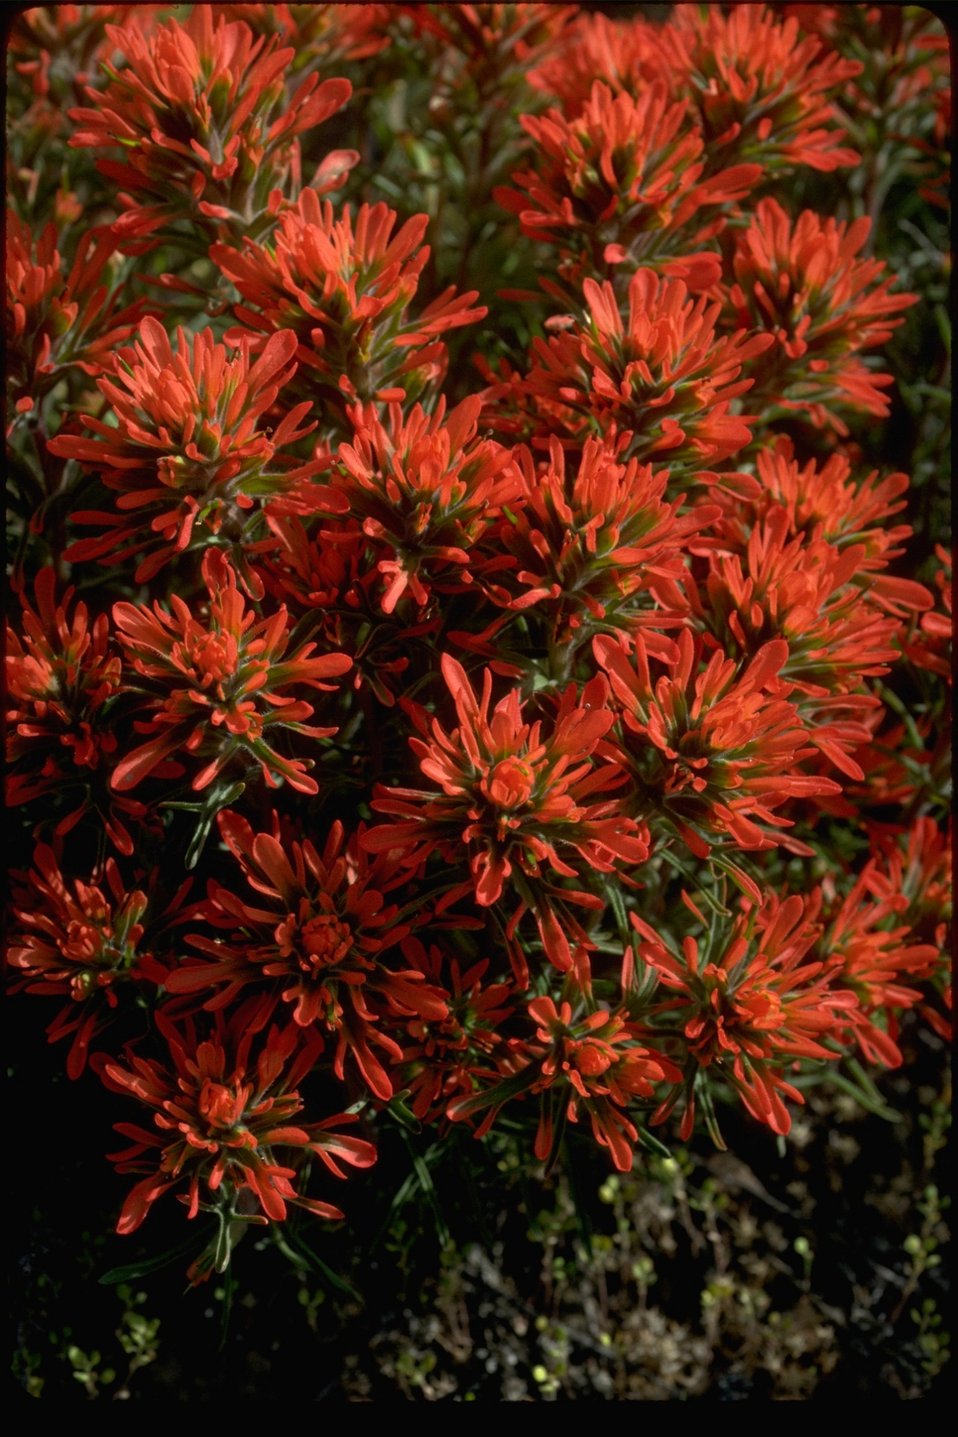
Desert Paintbrush (Castelleja chromosa) located in the sagebrush areas near Hines, Oregon.